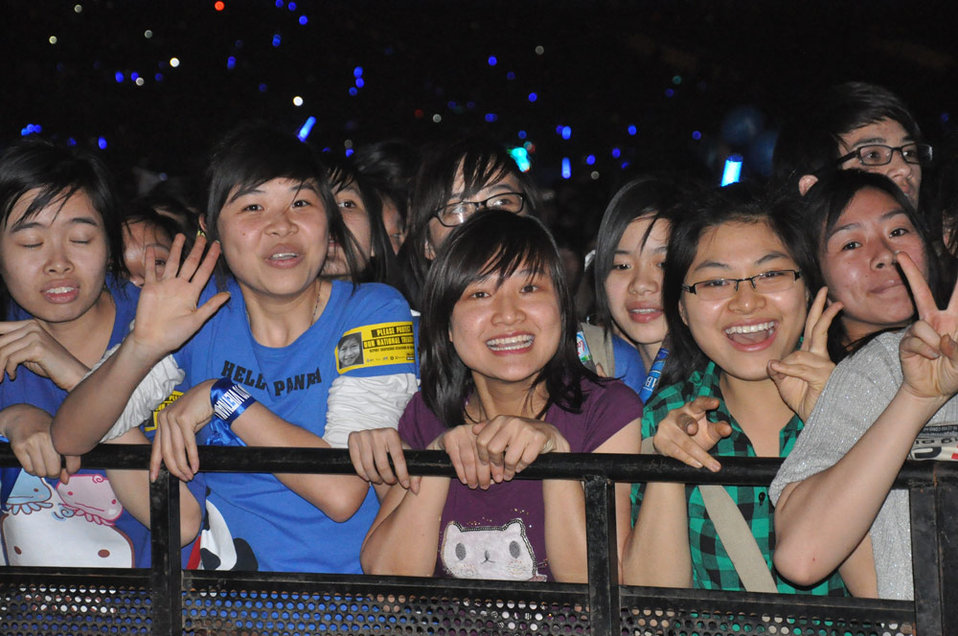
MTV EXIT Hanoi concert March 27, 2010